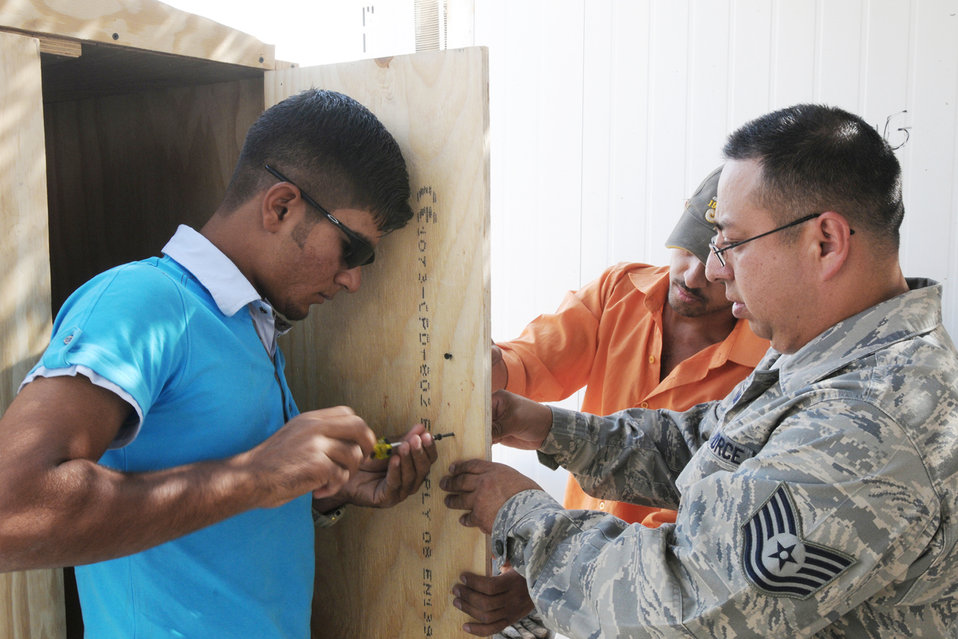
Airmen provide local Iraqis building skills

Tech. Sgt. Alexander Almonte helps guide Nabil Salman and Abdqader Umer to assemble a cabinet by hand Oct. 17, 2009, at Kirkuk Air Base, Iraq. Sergeant Almonte, a 506th Expeditionary Civil Engineer Squadron utilities systems craftsman, is deployed from McChord Air Force Base, Wash.